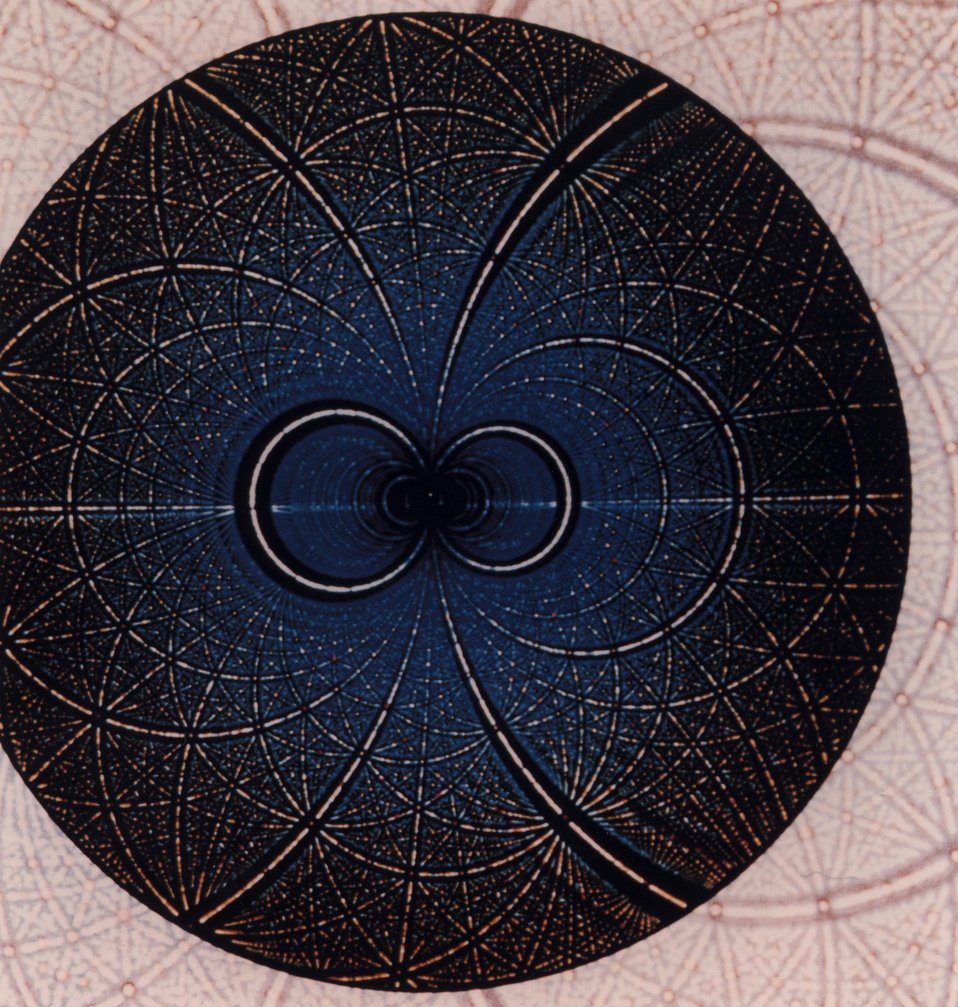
Molecular Snapshots. Laue diffraction experiments use a wide and continuous spectrum of wavelengths from a synchronize radiation source -- the x-ray analogue of 'white light.' Shown here is a computer simulation of a Laue pattern for the enzyme glycogen phosphorylation.